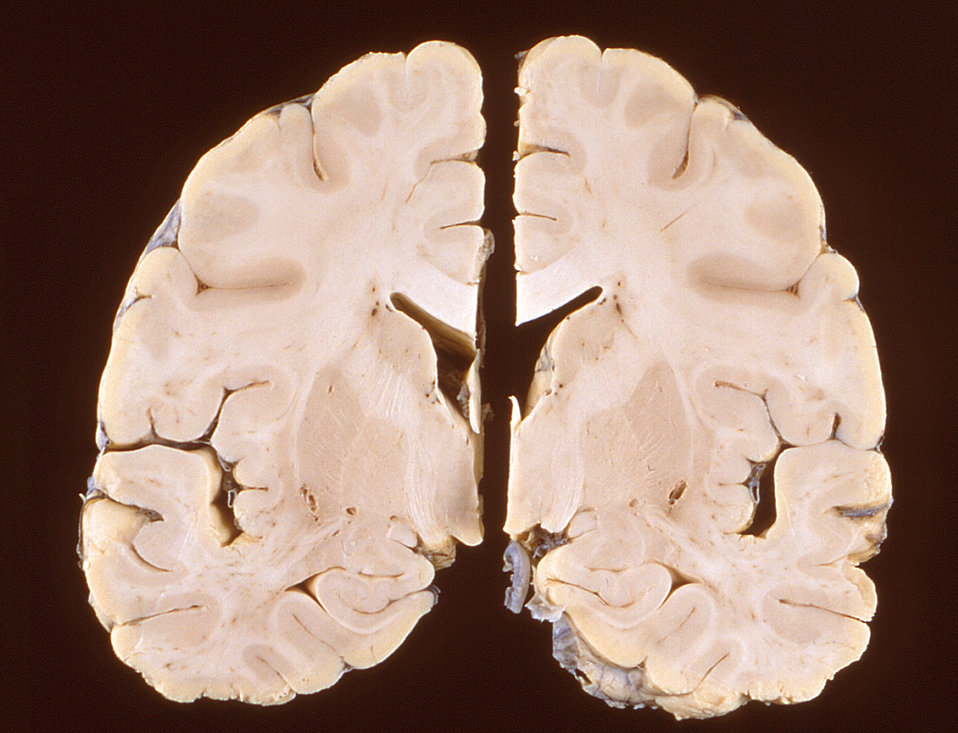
This photomicrograph revealed some of the pathologic changes associated with a Nipah virus infection affecting the central nervous system of a human patient.